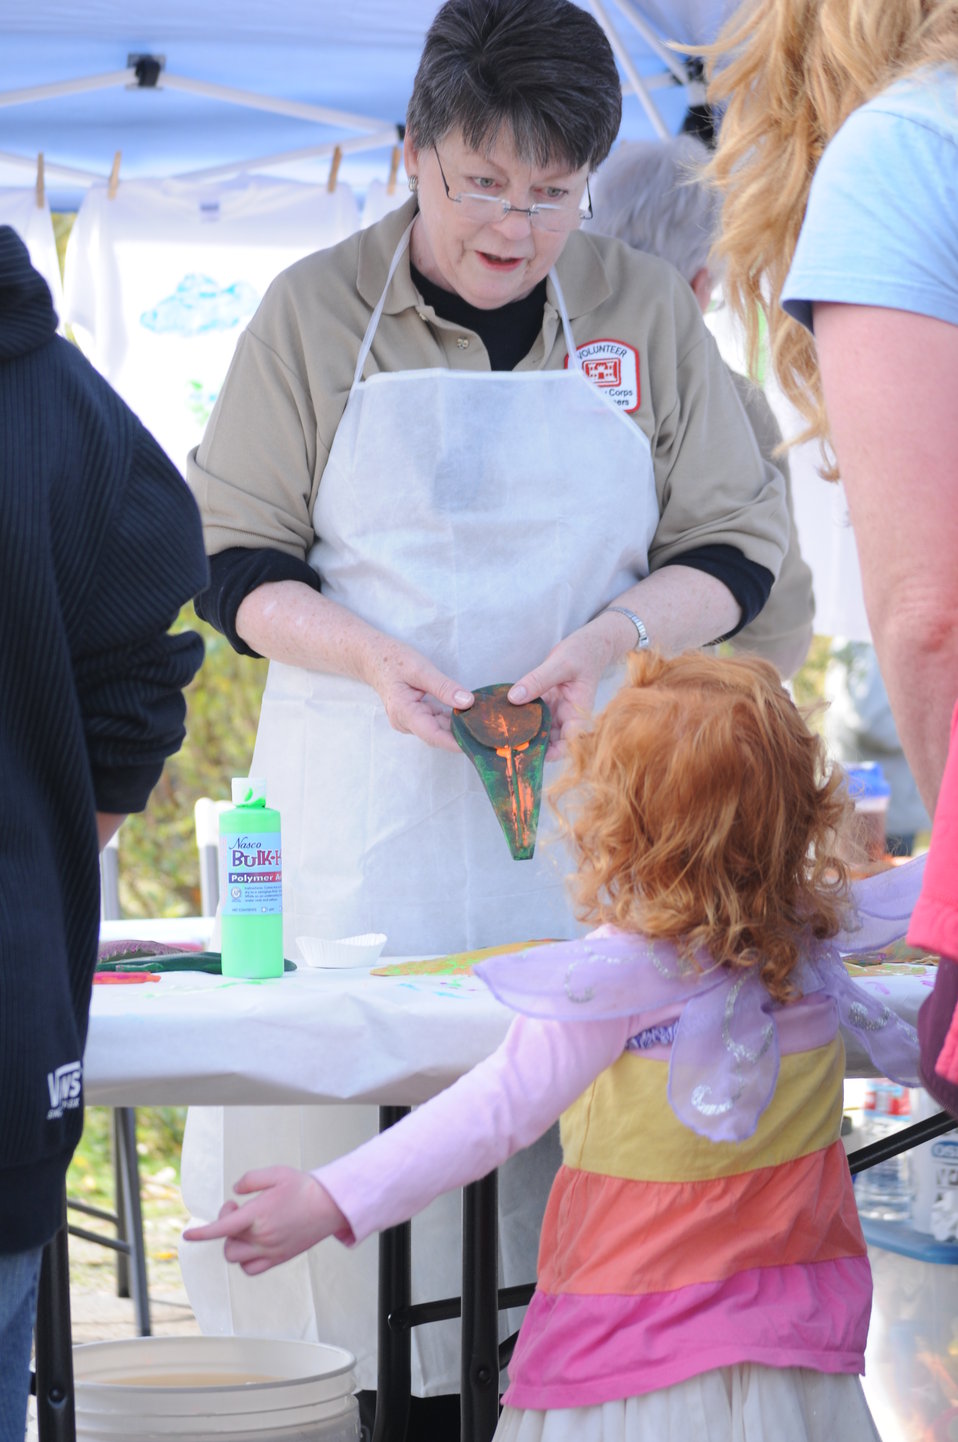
KNIGHT’S FERRY, Calif. (Nov. 16, 2010) – U.S. Army Corps of Engineers Sacramento District’s Stanislaus River Parks volunteer Delores Dahinden helps a young attendee with her t-shirt fish imprinting art project at the second annual Stanislaus River Salmon Festival here Nov. 14. An estimated 3,000 people, twice as many as last year, attended the event.